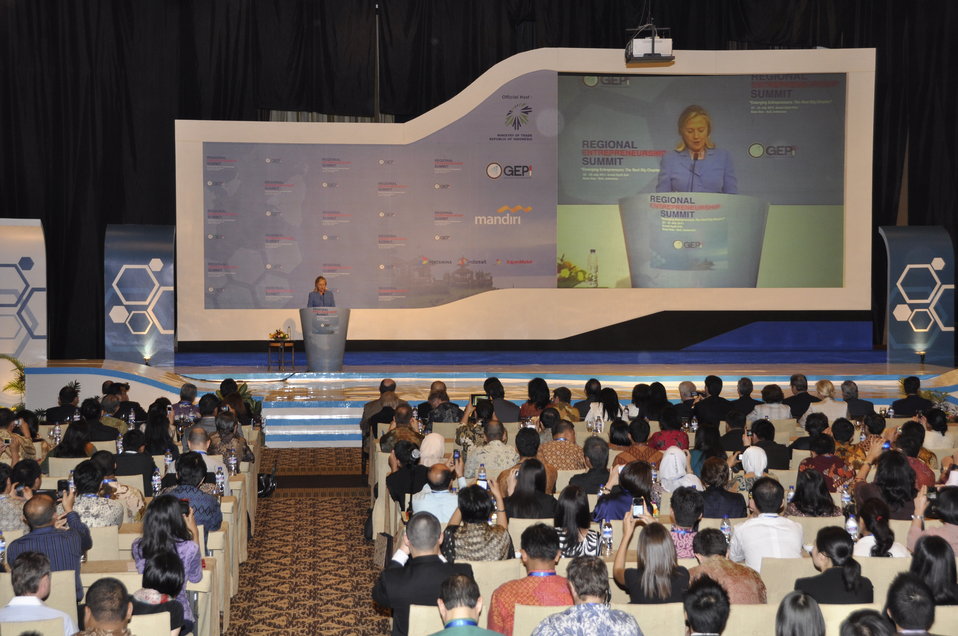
Secretary Clinton Delivers Remarks at the Regional Entrepreneurship Summit

U.S. Secretary of State Hillary Clinton delivers remarks at the Regional Entrepreneurship Summit in Bali, Indonesia, on July 23, 2011.